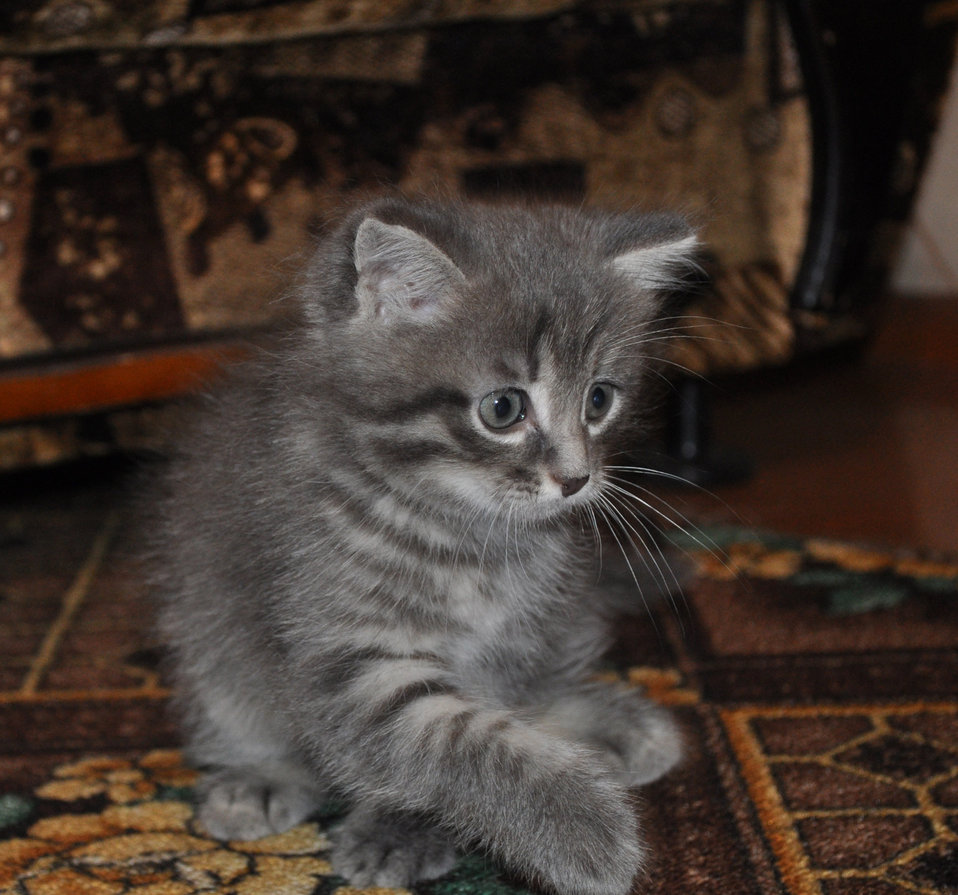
Kitten

Little kitten.